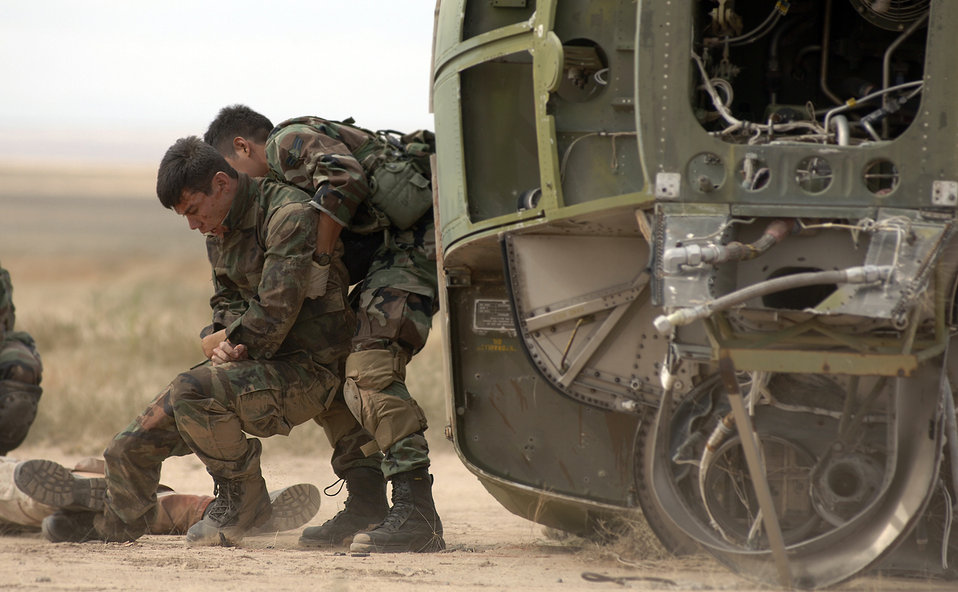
Seasoned PJ trains next generation

Airman 1st Class Kevin Freyre carries Airman 1st Class Nathan Greene to safety at a simulated helicopter crash scene after performing self aid and buddy care techniques during a mass casualty incident exercise at Kirtland Air Force Base, N.M., Oct. 6. The exercise is part of the pararescue recovery specialist course at the Pararescue and Combat Rescue Officer School.